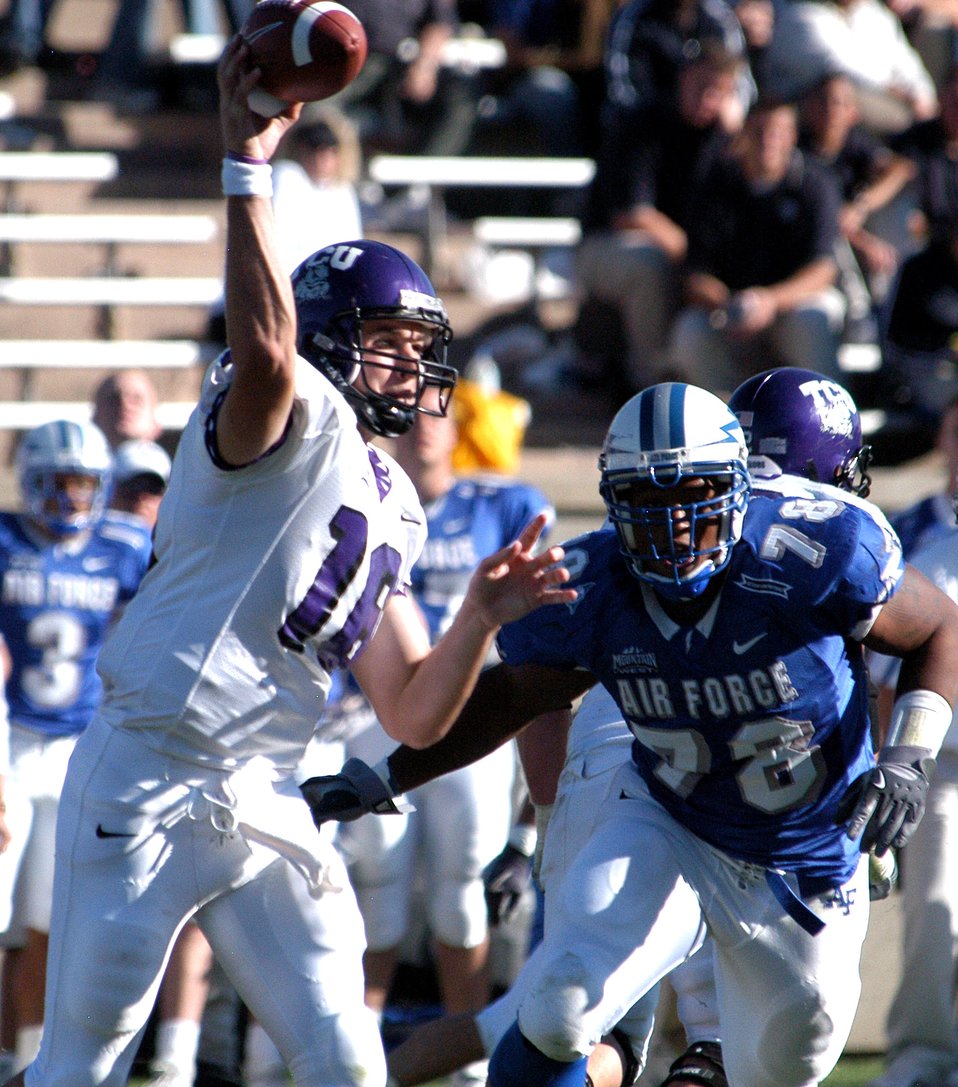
Falcons football

U.S. AIR FORCE ACADEMY, Colo. -- Falcons defensive end Nelson Mitchell arrives too late to interfere with Texas Christian University quarterback Jeff Ballard, who played in place of starter Tye Gunn. Ballard completed 20 of 28 passes for 302 total yards. TCU won, 48-10.